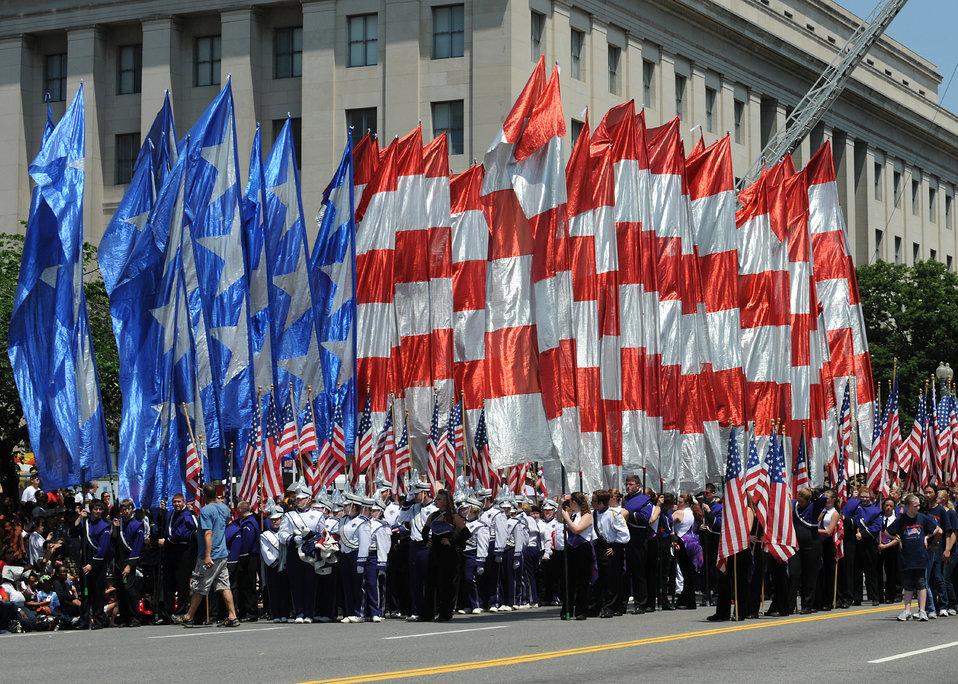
National Memorial Day Parade

A precession of flags is carried by volunteers at the National Memorial Day Parade on May 28, 2012 in Washington D.C. The annual National Memorial Day Parade is an opportunity for thousands of patriotic Americans to come together and honor those who have sacrificed so much in service to our country.